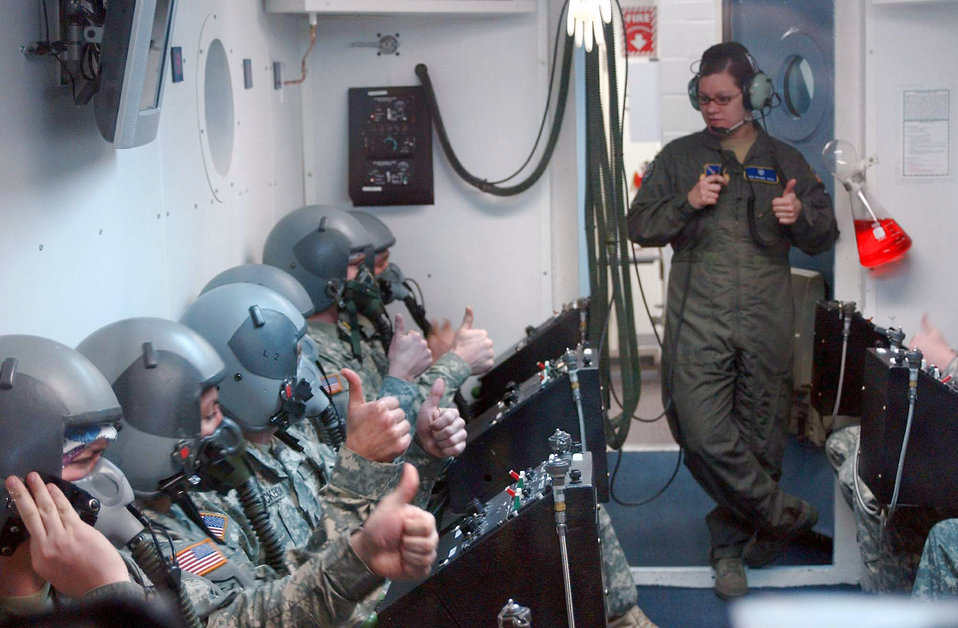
Guard aviators gear up for Afghanistan deployment

Senior Airman Rachel Cole makes a last minute breathing apparatus check on New York and Virginia National Guardsmen before sealing the oxygen chamber during high-altitude training at Andrews Air Force Base, Md., Feb. 25.